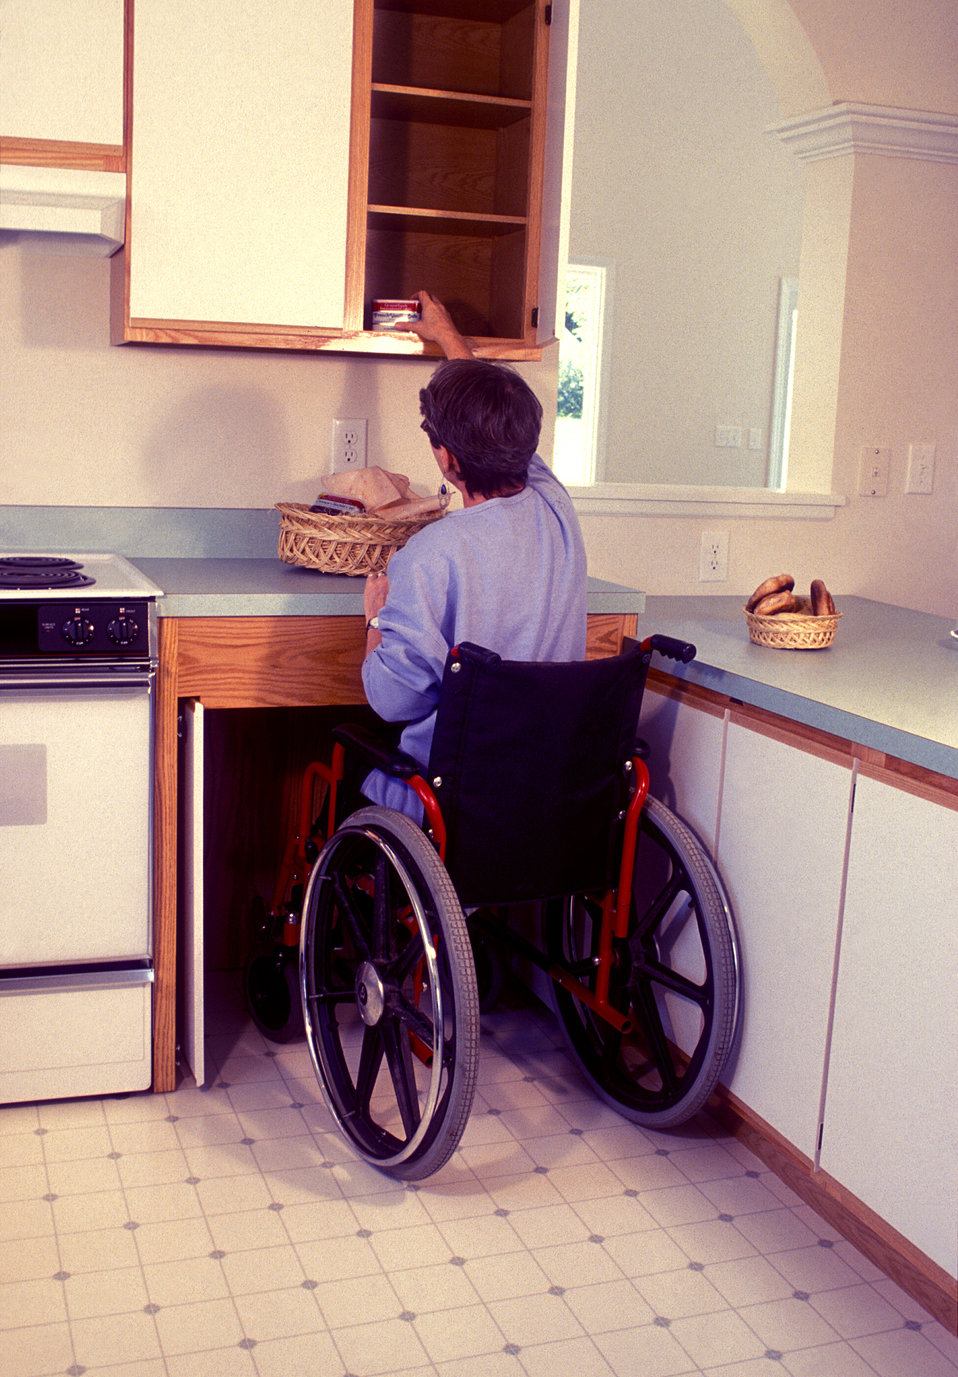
This 1994 image depicted a woman seated in her wheelchair inside a kitchen in which the cabenitry had been ergonomically-designed so as to accommodate the widest possible group of end users. These kitchen base cabinets easily converted into knee-spaces critical for people using wheelchairs, as well as those with stamina or balance limitations, who had to sit while completing extended food-preparation activities. The cabinet design included retractable doors that could be slid underneath the counter, and rolling cart storage that could be removed, thereby, opening up the knee-spaces, which accommodated wheelchair users quite comfortably. Note that the adaptable cabinet had been located in a place that would assist with both the use of the range, and facilitate in reaching wall cabinets above.